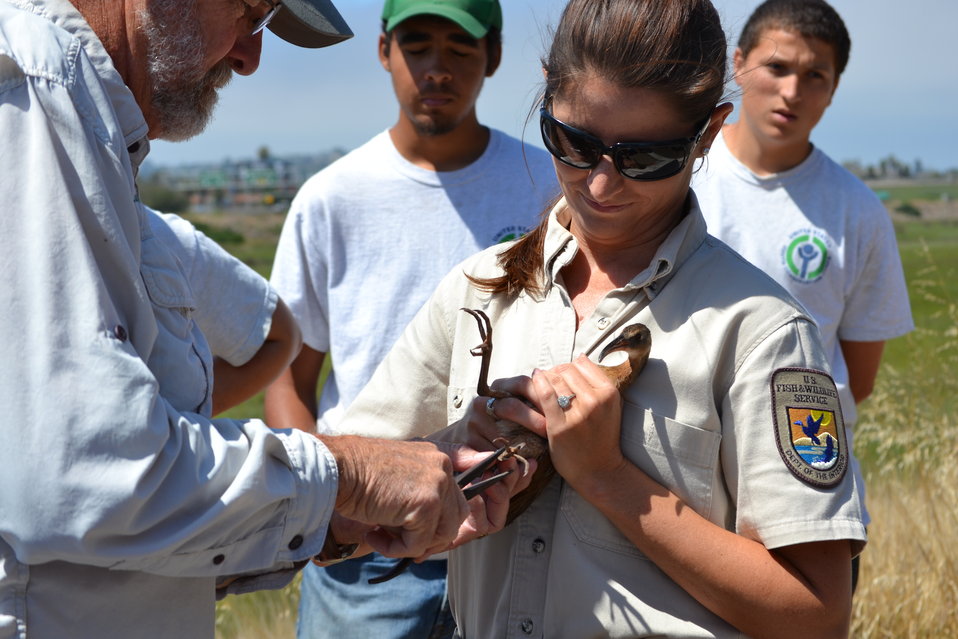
Light-footed clapper rail receives leg band

Carlsbad Fish & Wildlife Service biologist, Erin McCarthy, holds an endangered light-footed clapper rail while it receives a leg band before being released into the wild July 19, 2011, at the San Diego River Channel, San Diego, CA. This bird was captive bred in a clapper rail recovery program. The recovery program is a partnership between three breeding centers, along with the USFWS, U.S. Navy, the Port of San Diego, the California Department of Fish and Game and independent wildlife biolgists. The three breeding programs are administered by the following San Diego conservation organizations: SeaWorld San Diego, the Chula Vista Nature Center and the San Diego Zoo's Safari Park.